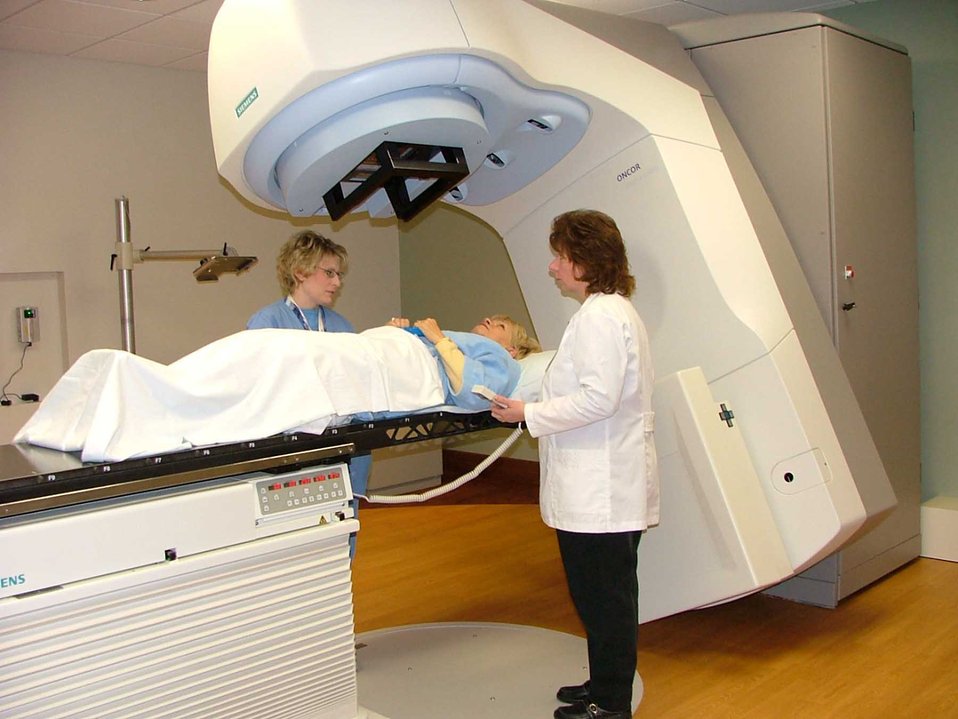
2007 Baldrige Award, Mercy Health Systems (MHS)

2007 Malcolm Baldige National Quality Award, Healthcare, Recipient Profile